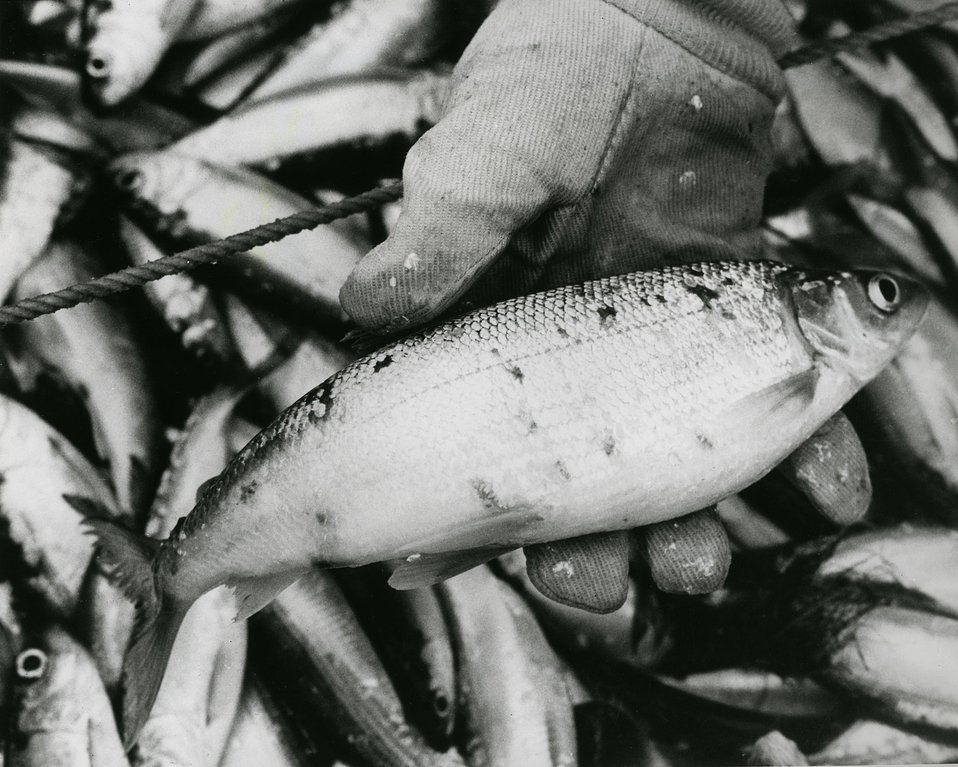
Small fish like this are analyzed by Argonne scientists to determine the amounts of metallic elements they contain.
c. 1970